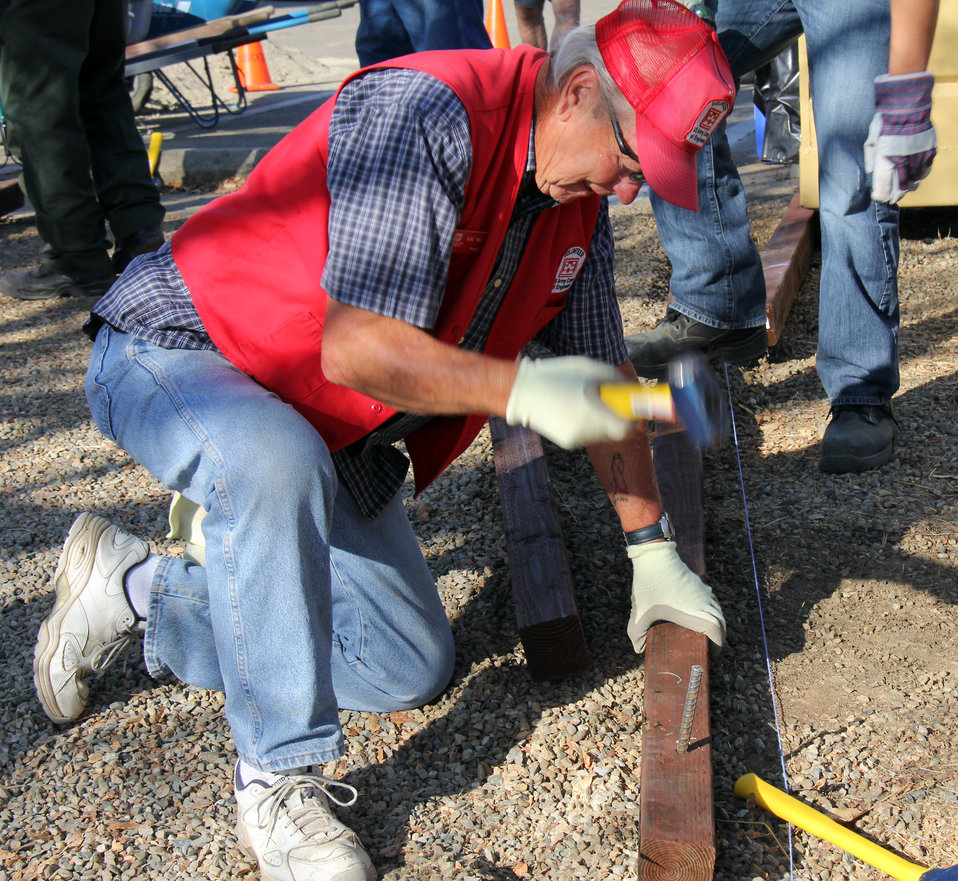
Hammering out details (National Public Lands Day 2012)

A volunteer at Pine Flat Lake puts his heart (and back) into park improvements during National Public Lands Day, Sept. 29, 2012. U.S. Army Corps of Engineers park staff and an army of volunteers celebrated the day with park improvement projects, camaraderie and food.